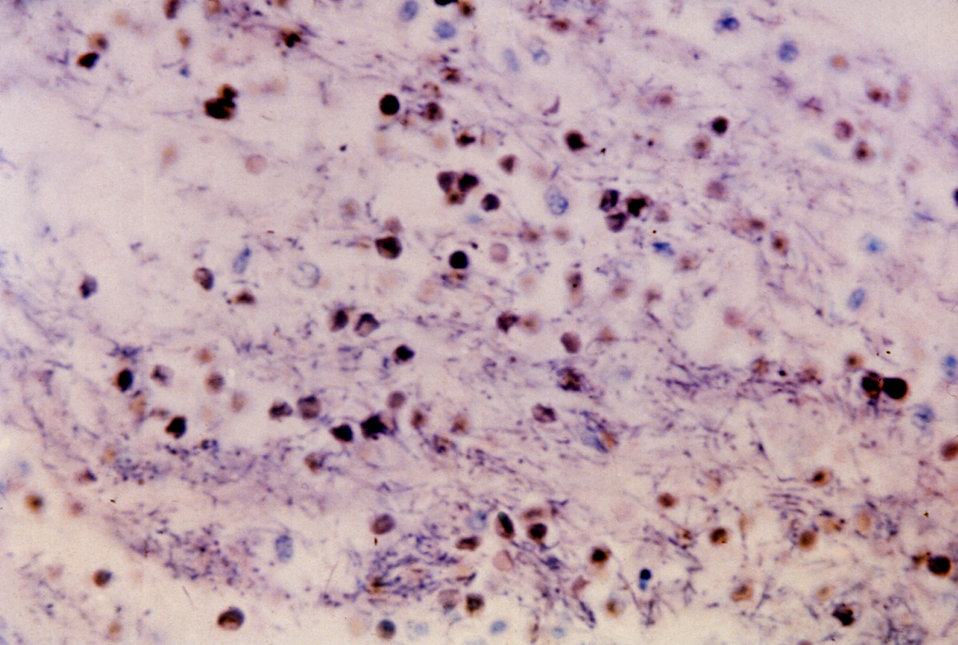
This micrograph reveals a meningeal infection due to Bacillus anthracis bacteria using an H&E stain.